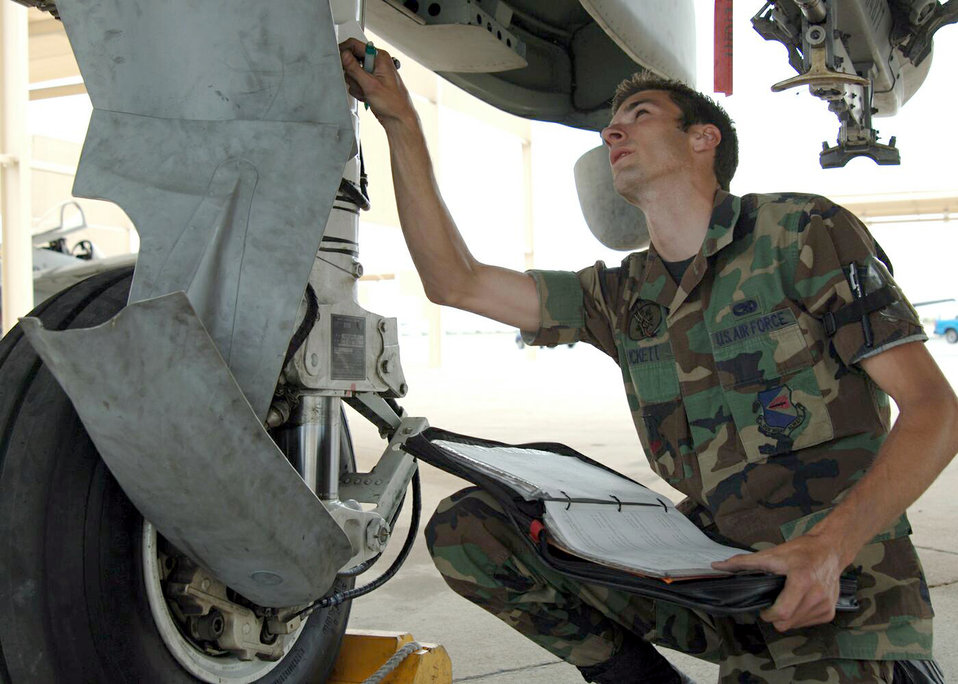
Analyze this

DAVIS-MONTHAN AIR FORCE BASE, Ariz. -- Staff Sgt. Thomas Puckett inspects an A-10 Thunderbolt II for a cost and analysis report on a recent aircraft mishap here. He is a crew chief assigned to the 355th Aircraft Maintenance Squadron.